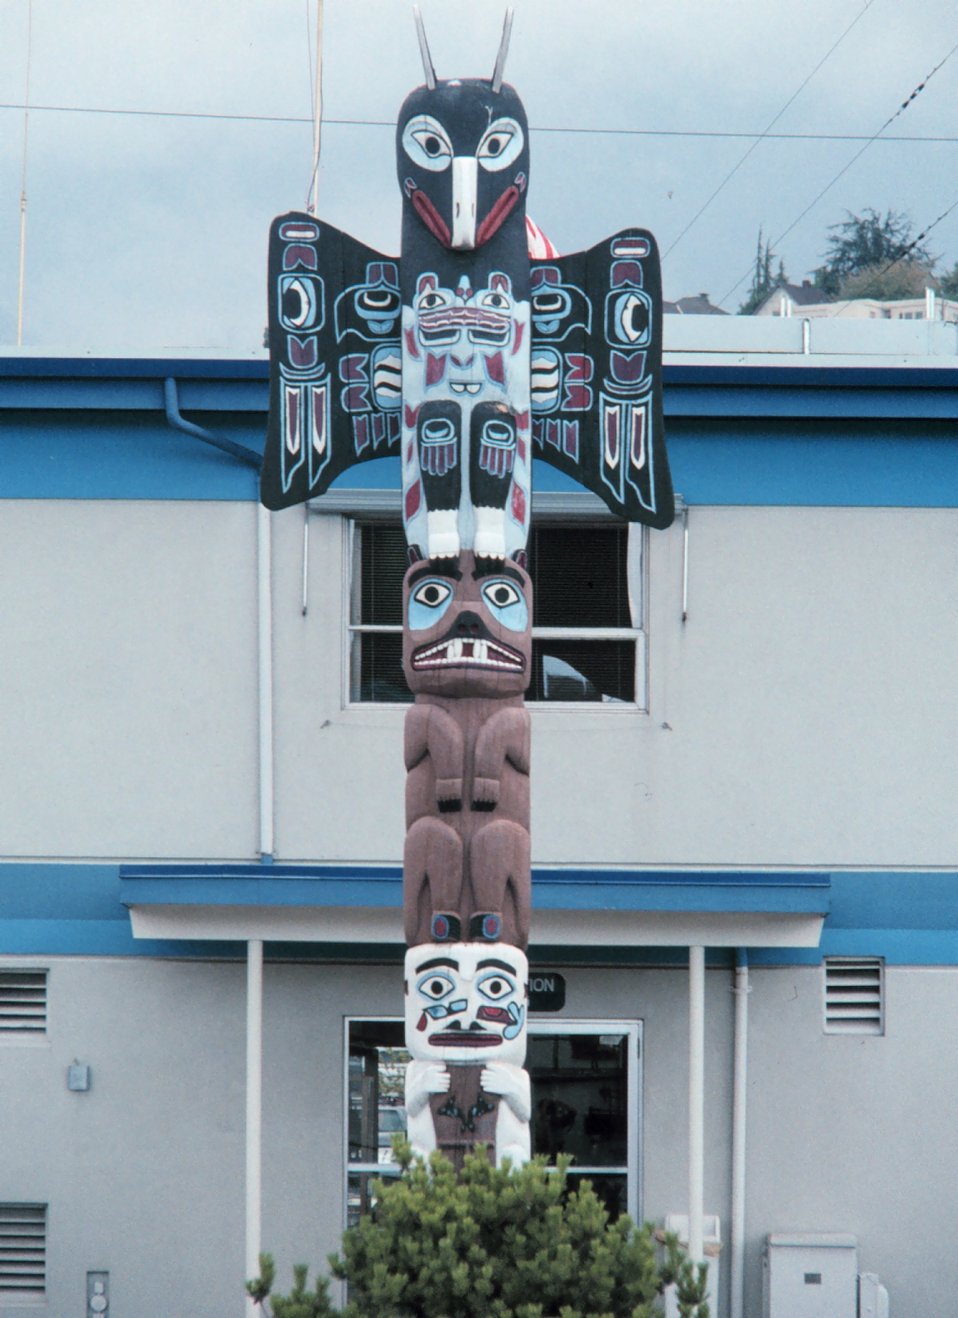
The totem pole at NOAA's Pacific Marine Center